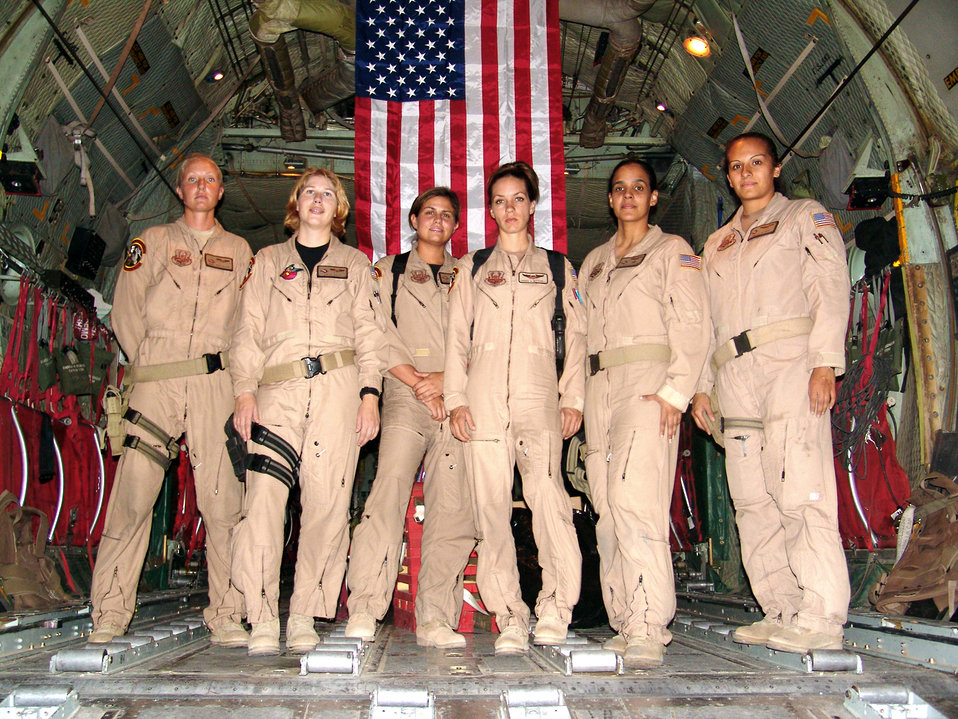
Not your daddy's C-130

SOUTHWEST ASIA -- From left to right, Staff Sgt. Josie E. Harshe, flight engineer; Capt. Anita T. Mack, navigator; 1st Lt. Siobhan Couturier, pilot; Capt. Carol J. Mitchell, aircraft commander; and loadmasters Tech. Sgt. Sigrid M. Carrero-Perez and Senior Airman Ci Ci Alonzo, pause in the cargo bay of their C-130 for a group photo following a recent combat mission.